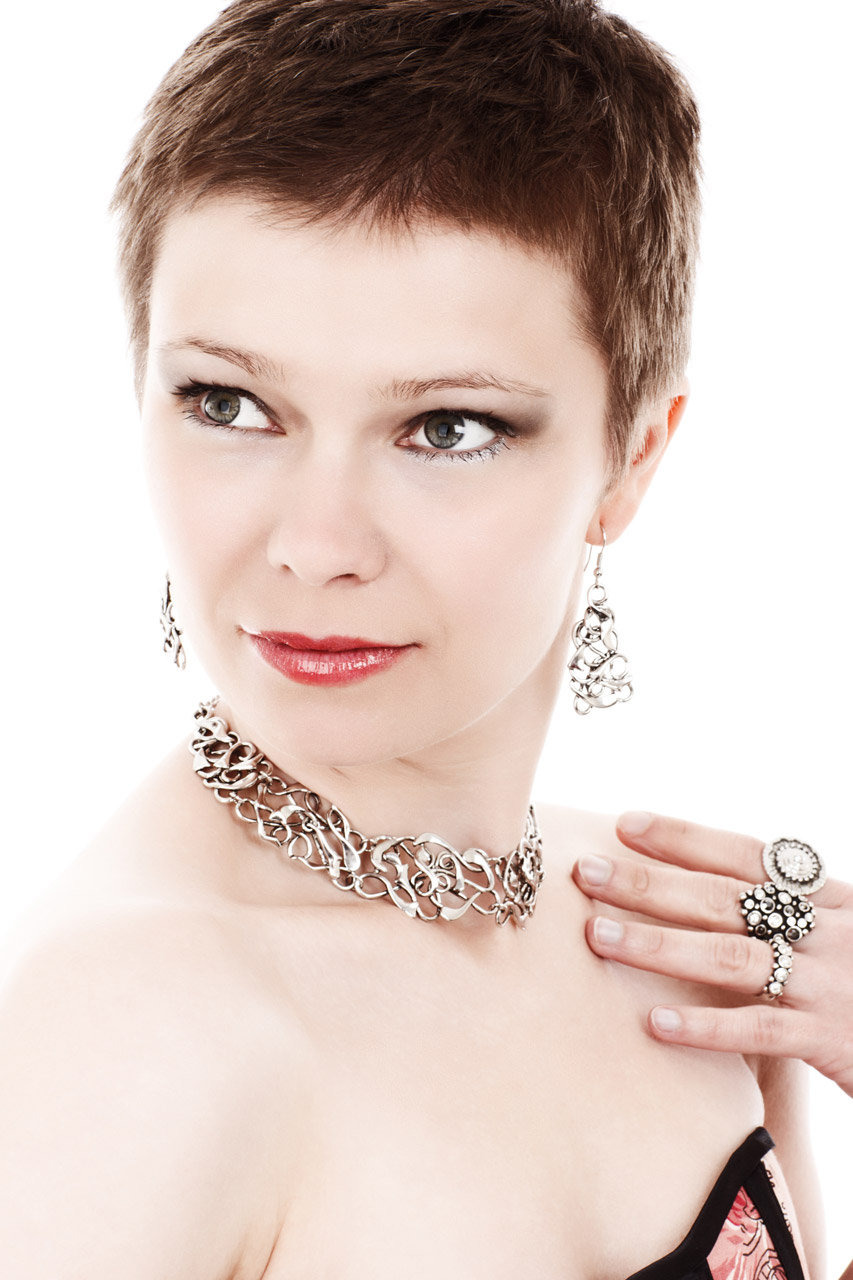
Glamour portrait

Portrait of a young woman isolated on white background - jana svojsova.